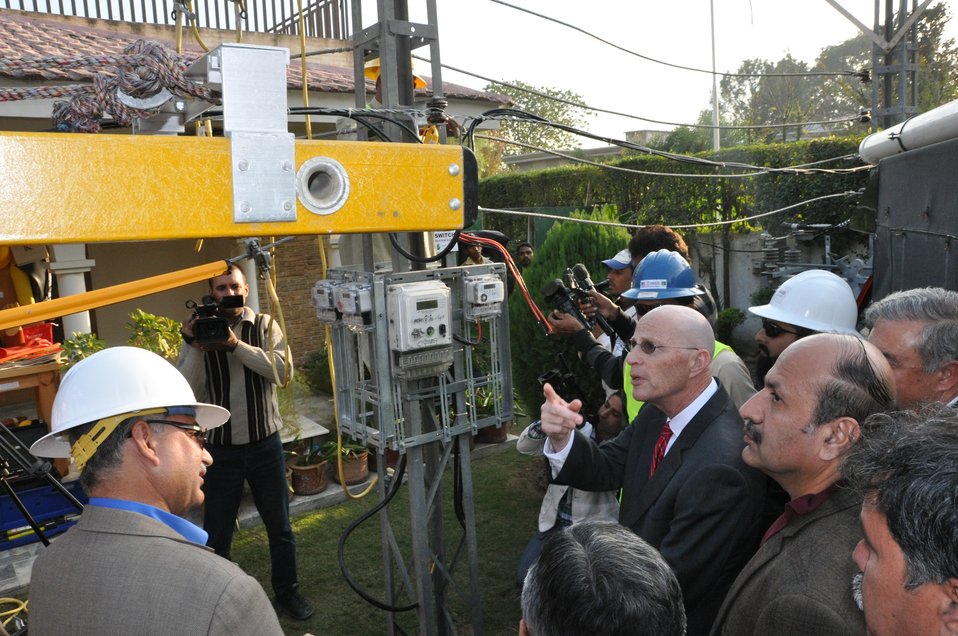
Breifing about linemen tools and loaders (2)